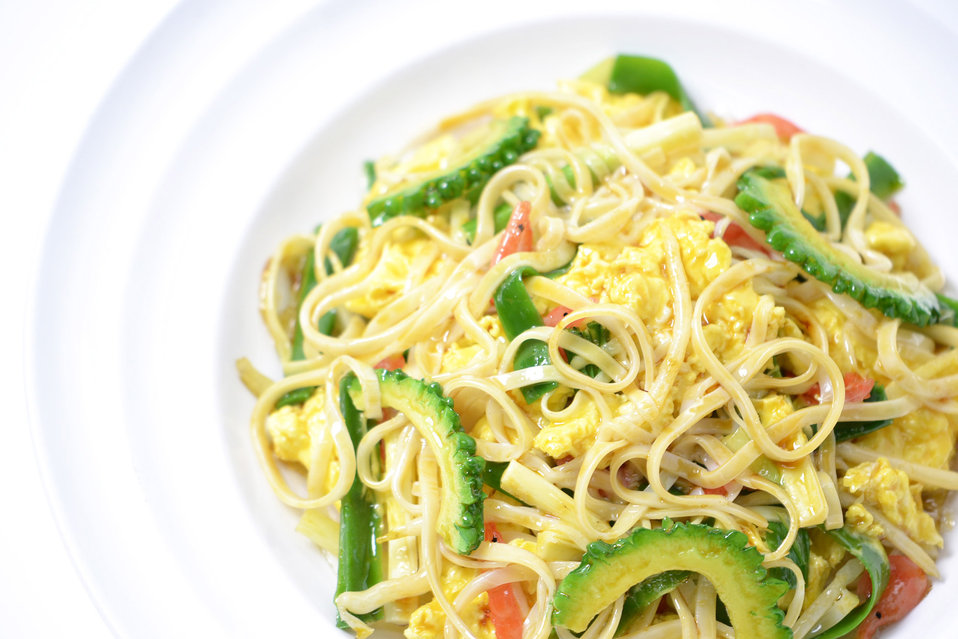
Fried goya noodle, okinawa food.